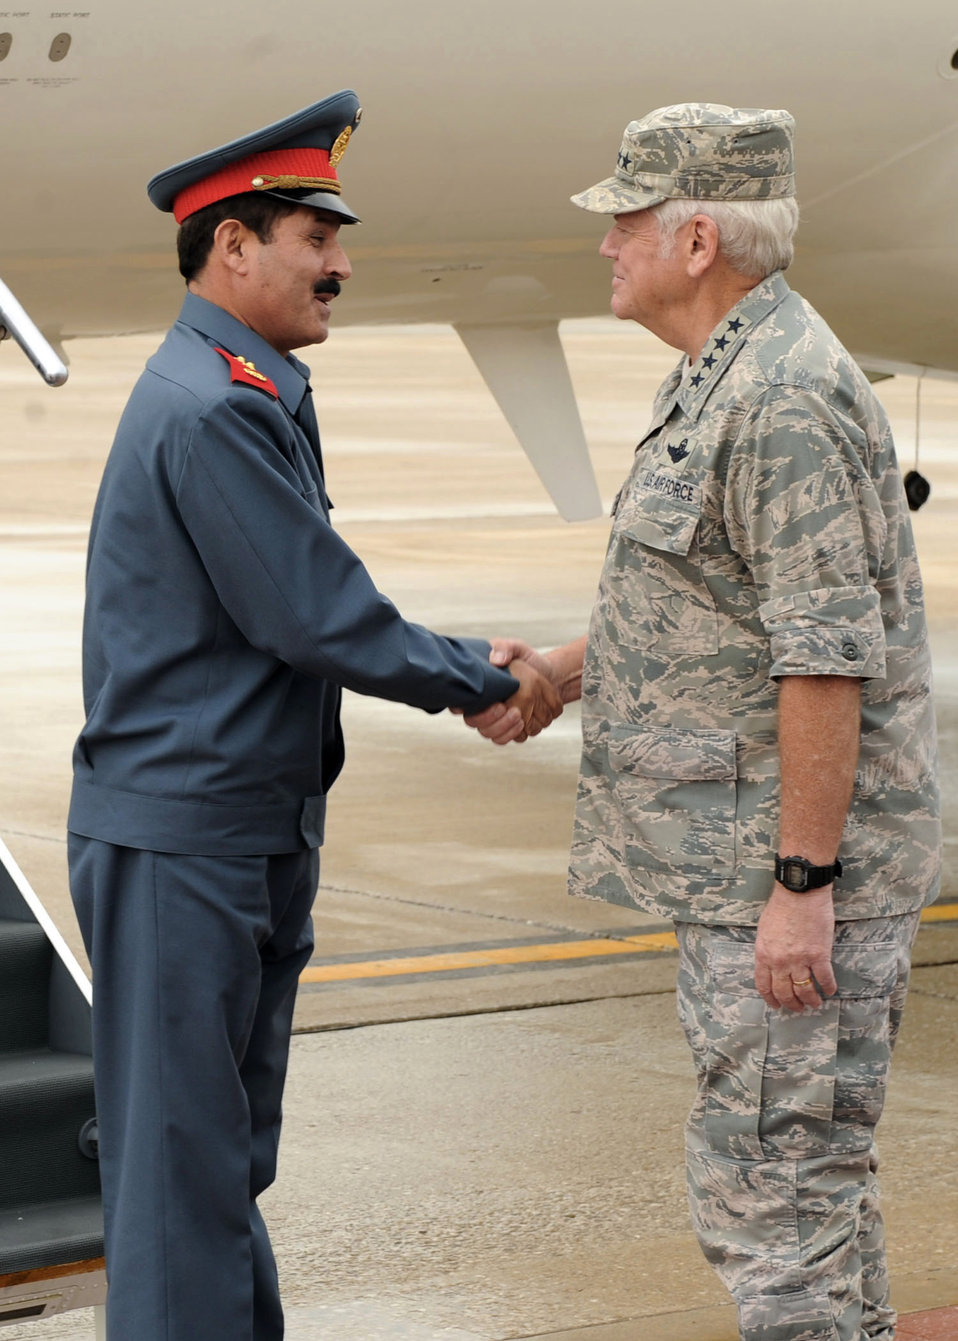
Afghan general visits Scott AFB

Gen. Arthur J. Lichte, commander of Air Mobility Command, greets Maj. Gen. Mohammad Dawran, commander of the Afghan National Army Air Corps, as he arrives at Scott Air Force Base, Ill., July 15. General Dawran's visit here was to continue an open dialog between senior military leaders of the two countries and to reinforce airlift concepts that are being applied throughout Afghanistan.